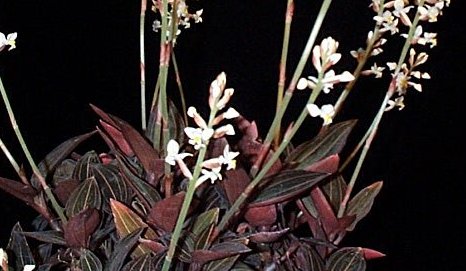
Ludisia discolor (= Haemaria discolor)